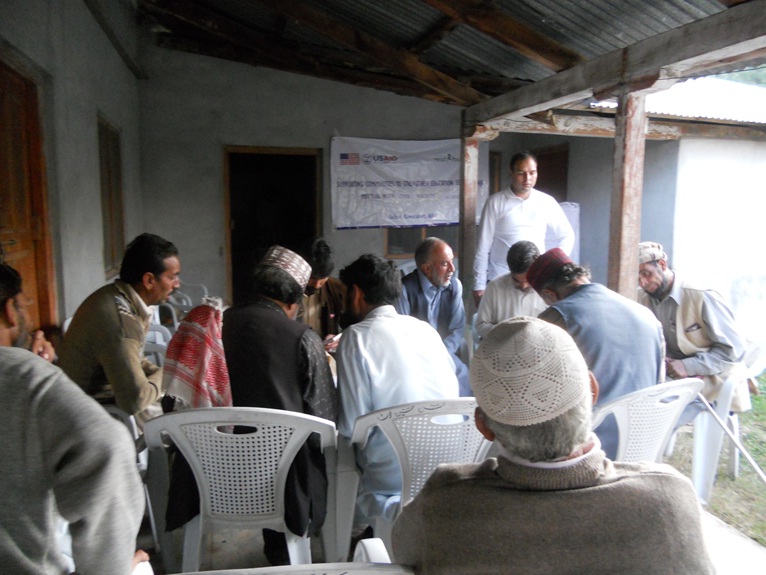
Caption 16 - READ Foundation - AJK RWLKT - Meeting Community for Education 2

Multiple CSOs from Azad Jammu & Kashmir (AJ&K) are also partners with USAID’s Citizens’ Voice Project. READ Foundation, a civil society organization with a background of working in the education sector, is one of them. Here a session on awareness about the right to education can be seen in progress in the Rawlakot district of AJ&K.